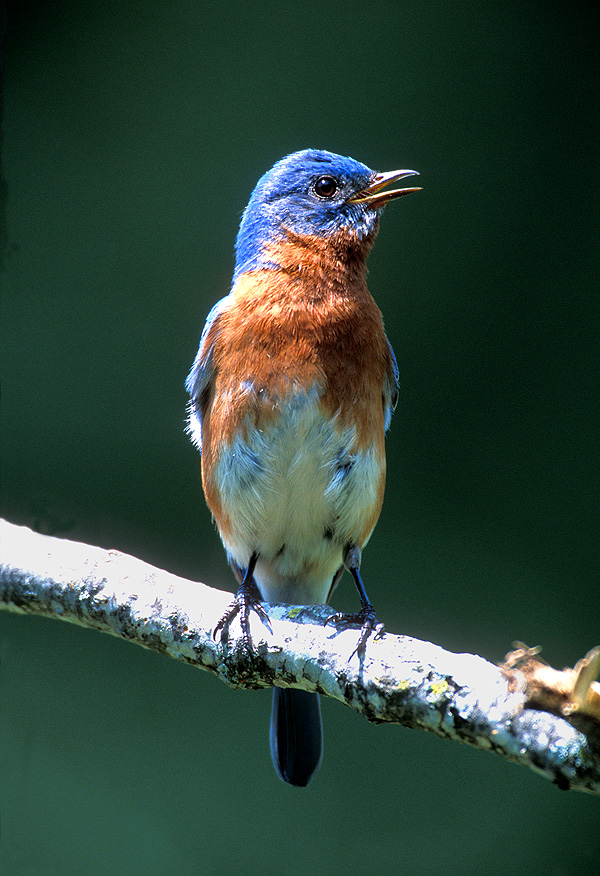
male eastern bluebird